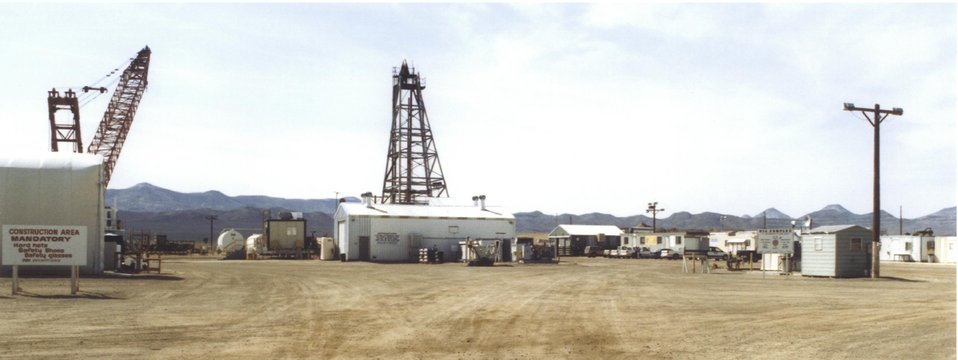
THE U1A COMPLEX AT THE NTS CONSISTS OF BUILDINGS AND INSTRUMENTATION TRAILERS FROM WHICH SCIENTISTS MONITOR EXPERIMENTS.

EXPLOSIVE TESTS ARE CONDUCTED DEEP UNDER THE NEVADA DESERT BY LAWRENCE LIVERMORE NATIONAL LABORATORY PHYSICISTS AND ENGINEERS. THE SUBCRITICAL EXPERIMENTS ARE AIMED AT PROVIDING IMPORTANT DATA TO EXPERTS WATCHING OVER THE NATION'S NUCLEAR STOCKPILE.